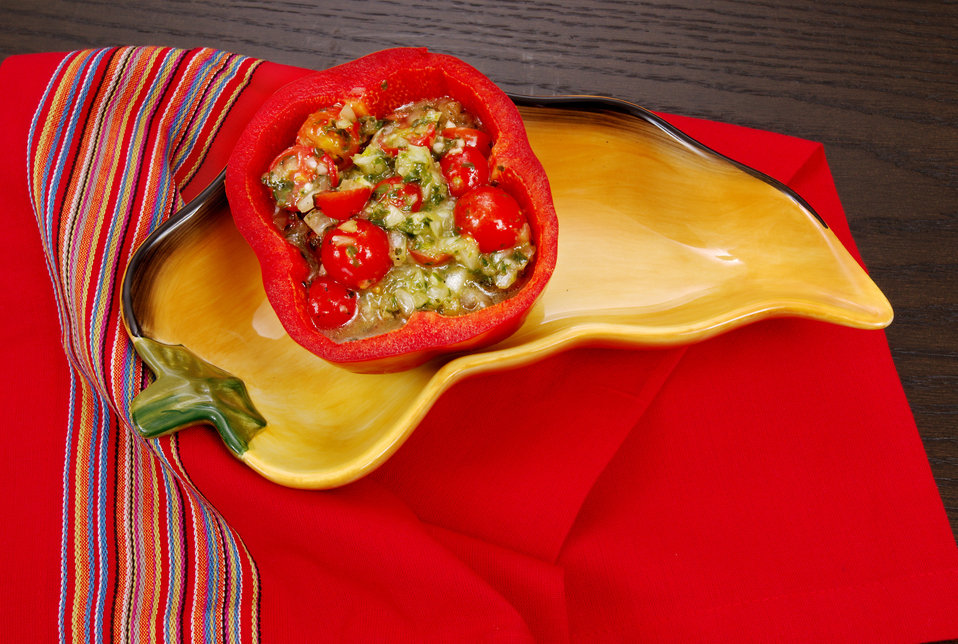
This image depicts a serving of a Vegetarian Stuffed Pepper, which based on its ingredients, is a very healthy choice as a meal, side dish or snack.